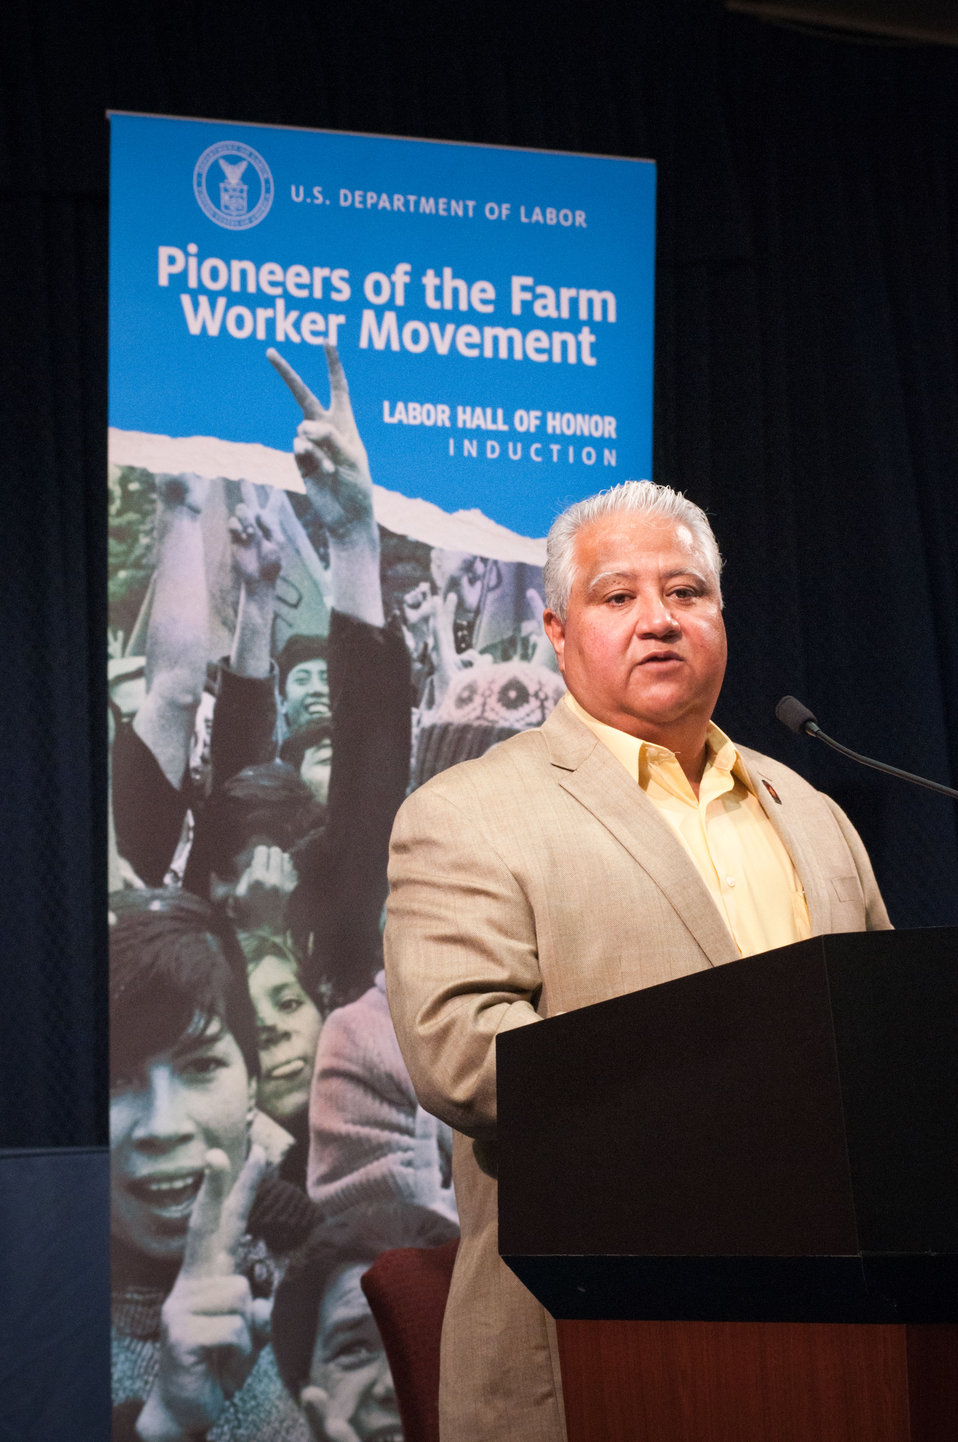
Paul Chavez, son of farm labor leader Cesar Chavez reflected on his father's non-violent methods to fight for the rights of migrant farm workers in the southwestern United States during the dedication of the Cesar E. Chavez Memorial Auditorium at the United States Department of Labor in Washington, D.C., Monday, March 26, 2012. Chavez's father founded the Cesar Chavez Foundation, a group that advocates for the rights of farm workers, acting to increase wages and improve the working conditions and safety of farm workers.